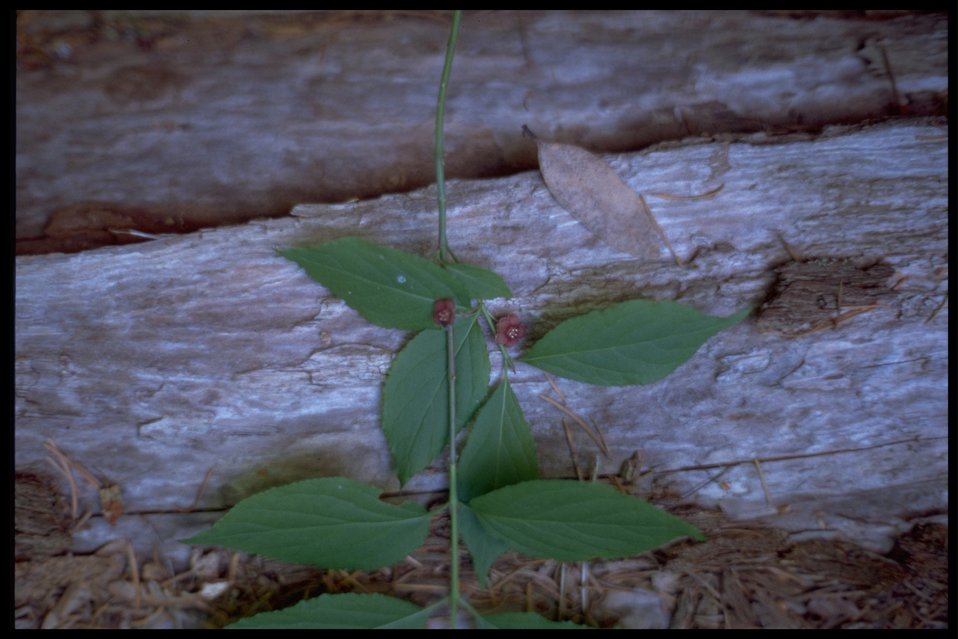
Euonymus occidentalis, commonly known as Western Wahoo.